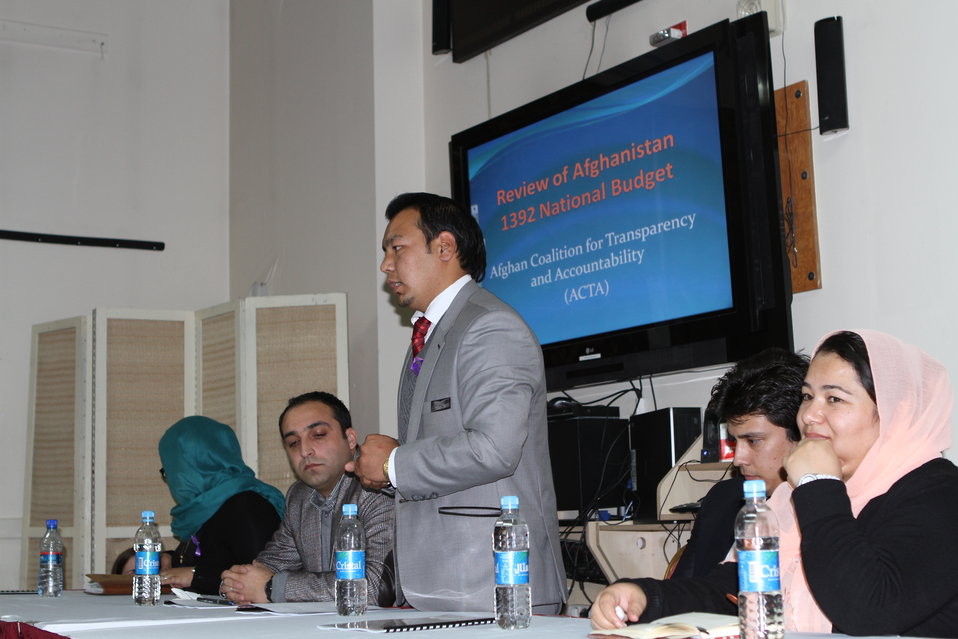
Presentation of the ACTA Civil Society analysis of the FY 1392 Afghan national budget